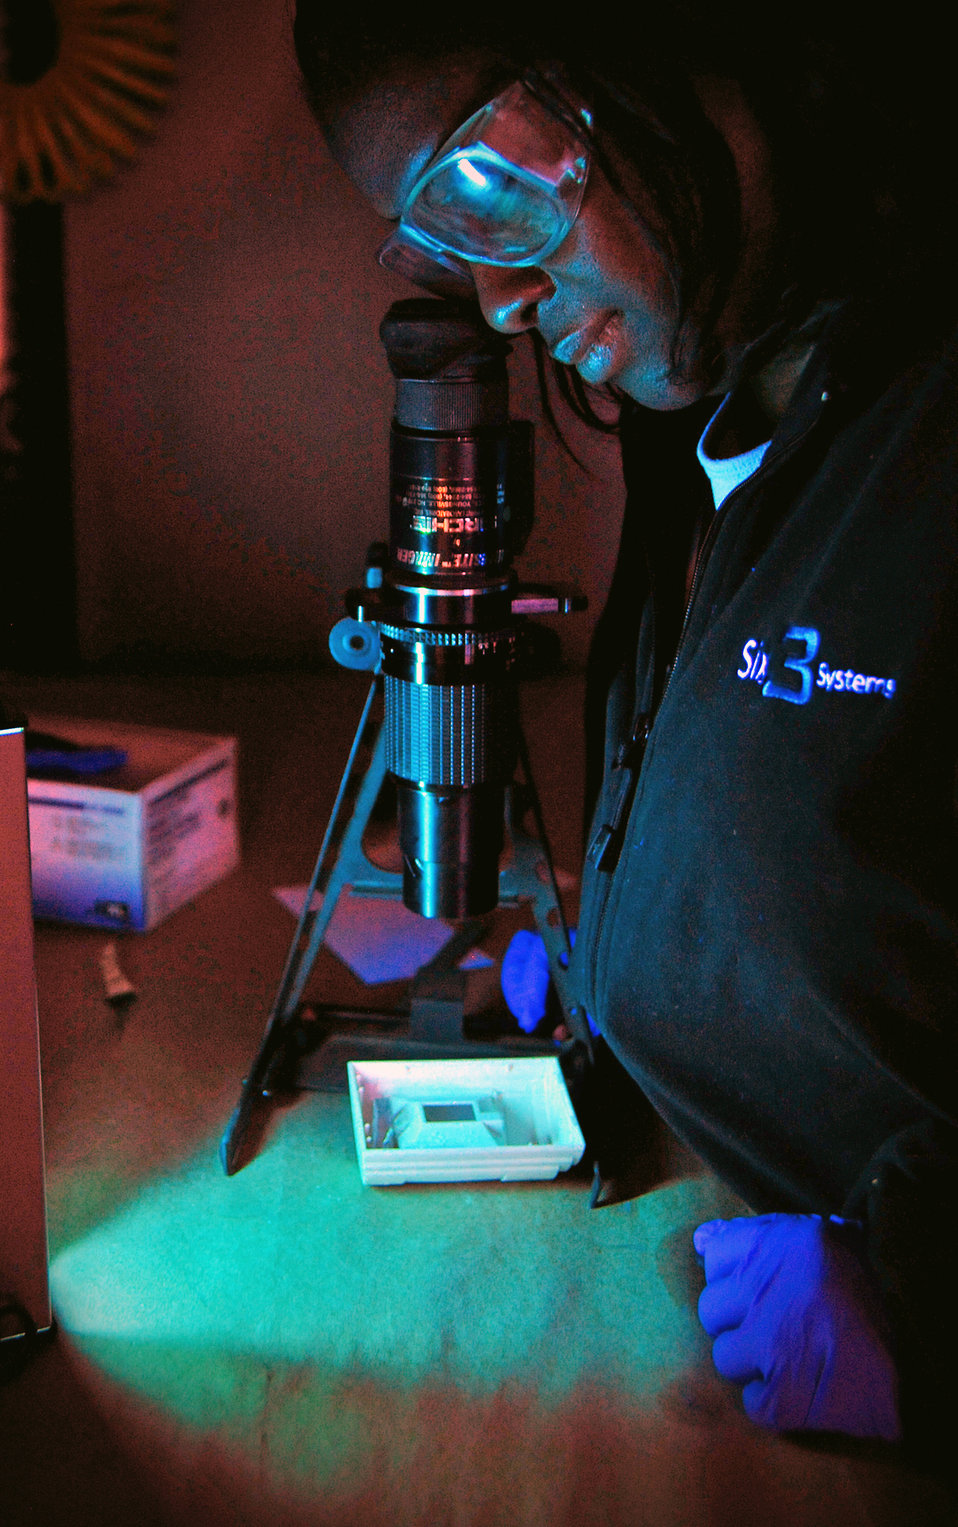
Joint task force Airmen

Nicola Charles looks through a reflective ultraviolet imaging system fingerprint scope to look for a fingerprint using an ultraviolet light source Dec. 8, 2010, on Camp Victory, Iraq. Ms. Charles is a Combined Explosives Exploitation Cell latent print examiner for Combined Joint Task Force Troy.